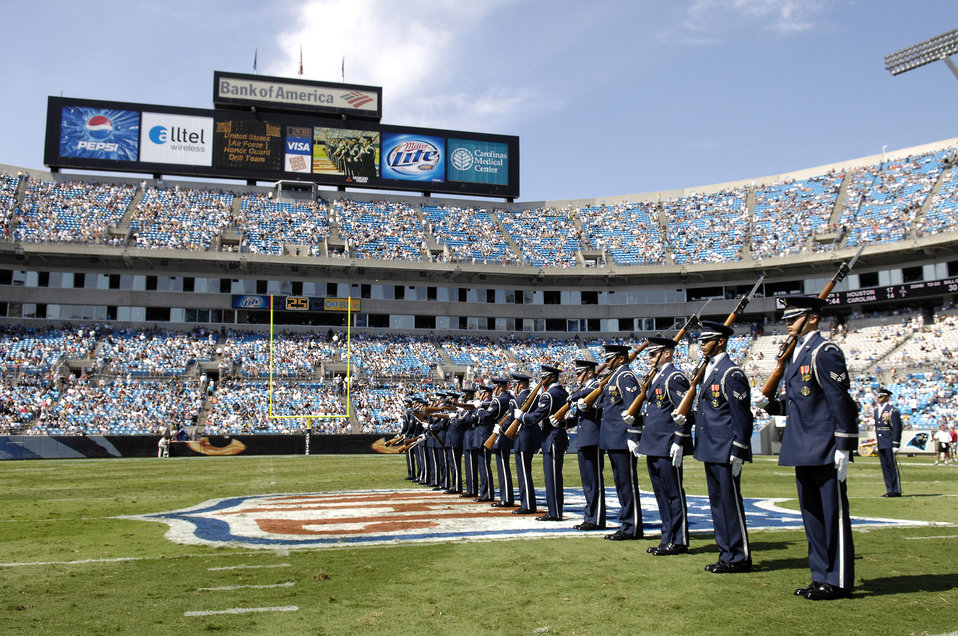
Drill team celebrates Air Force anniversary

Members of the Air Force Honor Guard Drill Team perform during halftime Sept. 16 at the NFL's Carolina Panthers vs. Houston Texans football game in North Carolina. The performance was part of the team's